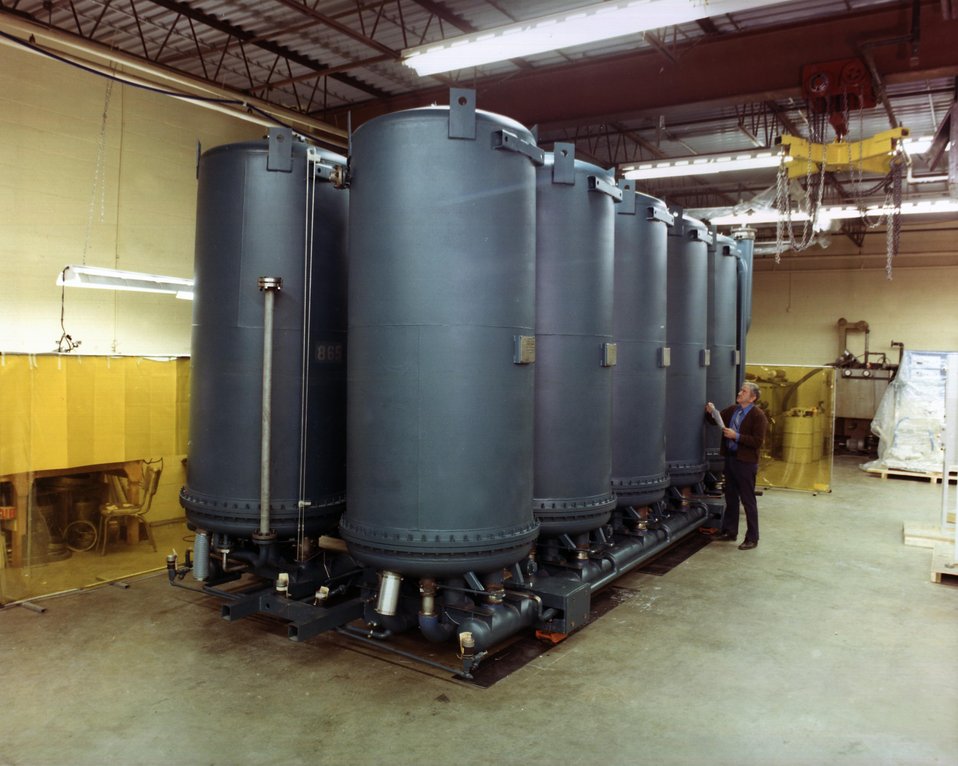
ONE OF THE TWO POWER SECTION PALLETS WHICH CONTAIN TEN FUEL CELLS AT THE VENDOR BEFORE SHIPMENT TO NEW YORK.

THE 4.8-MW FUEL CELL POWER PLANT CONTAINS A FUEL PROCESSOR FOR ENRICHING HYDROCARBON FUEL WITH HYDROGEN, A FUEL CELL POWER SECTION IN WHICH THE PROCESSED FUEL AND AIR REACT TO GENERATE DC POWER, AND AN INVERTER IN WHICH THE DC IS CHANGED TO AC. THIS TYPE OF POWER PLANT IS ESPECIALLY SUITED TO URBAN AND OTHER DENSELY POPULATED AREAS BECAUSE IT IS A MODULAR SYSTEM WHICH IS EASY TO TRANSPORT BY TRUCK AND ASSEMBLE IN A SMALL AREA. OTHER ADVANTAGES ARE ITS ALMOST NOISELESS OPERATION, LACK OF POLLUTION, AND ABILITY TO OPERATE WITHOUT LARGE QUANTITIES OF WATER. THE 4.8-MW FUEL CELL POWER PLANT IS BEING INSTALLED IN NEW YORK CITY AND WILL EVENTUALLY BE INTEGRATED INTO THE CONSOLIDATED EDISON UTILITY NETWORK.